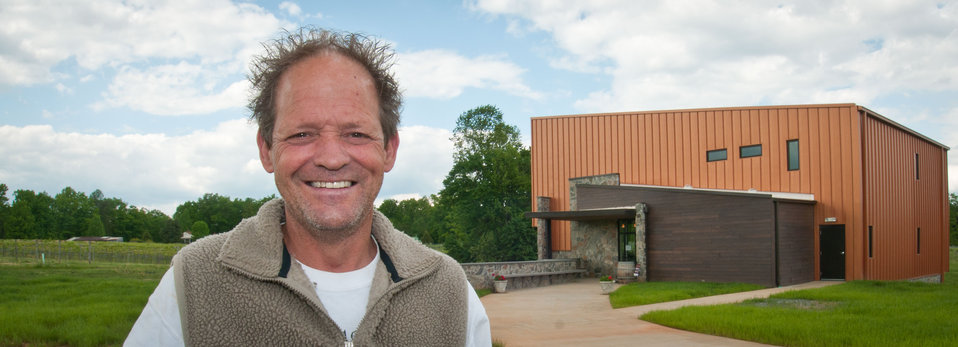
Cooper Vineyards vineyard manager Michael Boone in Louisa, VA, on May 4, 2011, the first winery on the East Coast and the second in the country to be awarded the fourth and highest, Platinum certification by Leadership in Energy and Environmental Design (LEED).
From a Virginia Wine Board Marketing Office press release, “The process of building a LEED platinum certified building was initially more expensive and arduous than co-owners, Jacque Hogge, MD and Geoffrey Cooper, MD expected, but they were able to get financial assistance from the United States Department of Agriculture. “Know that there are grants available to help with the costs of sustainable building projects,” Hogge advises to other potential green wineries. Cooper Vineyards received 2 of the 3 USDA (U.S. Department of Agriculture Rural Development (RD) Rural Energy Financing program) grants awarded in Virginia in 2010 to help with the expenses of their construction.”
Rural Energy Financing program focuses on loan guarantees, loans and grants to agricultural producers, businesses, cooperatives and rural residents for renewable energy systems and to make energy efficiency improvements.
The tasting room and building collects rainwater from the roof; uses low flow water fixtures to reduce usage by 40%; utilizes structurally insulated panels for the roof and walls; heats and cools the entire building using a geothermal system that includes pipes that are embedded in the parking lot; low-voltage LED lighting with daylight and occupancy sensors provide ample light when it is needed; a solar panel array provides more than 15% of the energy needs for the building, and much of the construction materials are from local and recycled material sources. For more information about USDA please go to www.usda.gov, Rural Development and Rural Energy Financing. LEED was developed by the U.S. Green Building Council (USGBC) is a 501 c3 non-profit organization committed to a prosperous and sustainable future for our nation through cost-efficient and energy-saving green buildings.